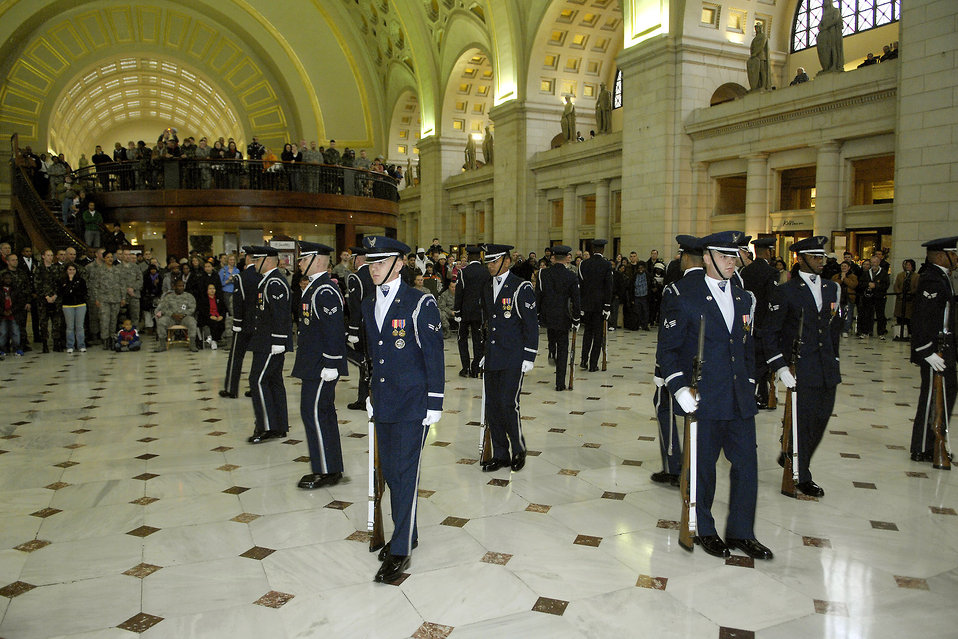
Air Force drill team kicks off 2008 season in D.C.

Air Force Honor Guard Drill Team members perform their new